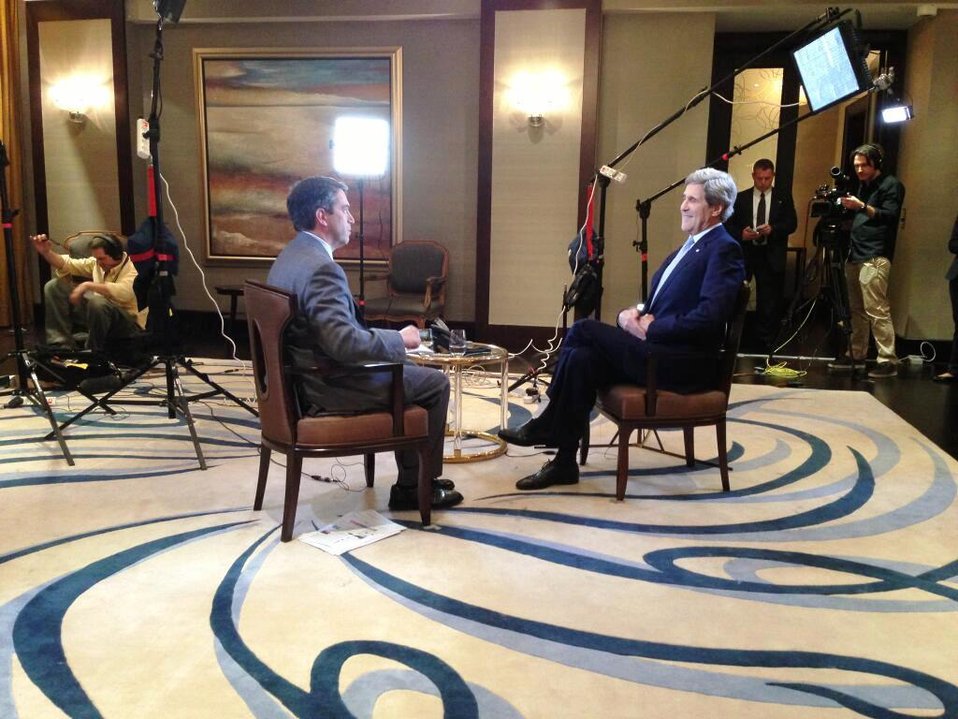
Secretary Kerry Conducts an Interview With Fox News' Rosen

U.S. Secretary of State John Kerry conducts an interview with Fox News' James Rosen in Doha, Qatar, on March 5, 2013.